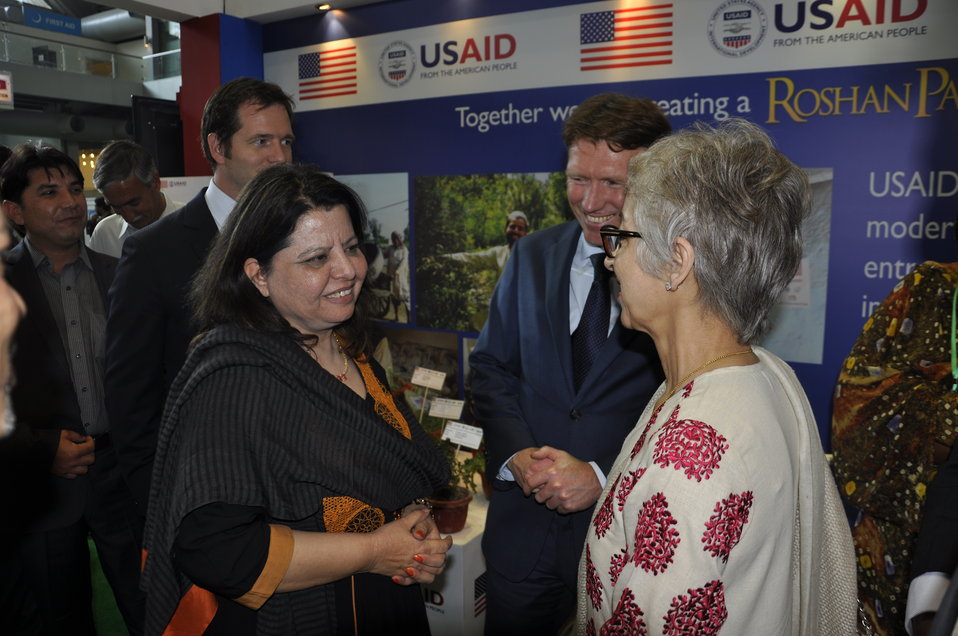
Ambassador of The Netherlands, Mr. Marcel de Vink interacting with the team of USAID's Entrepreneurs Project at Dawn Sarsabz Pakistan Agri Expo.